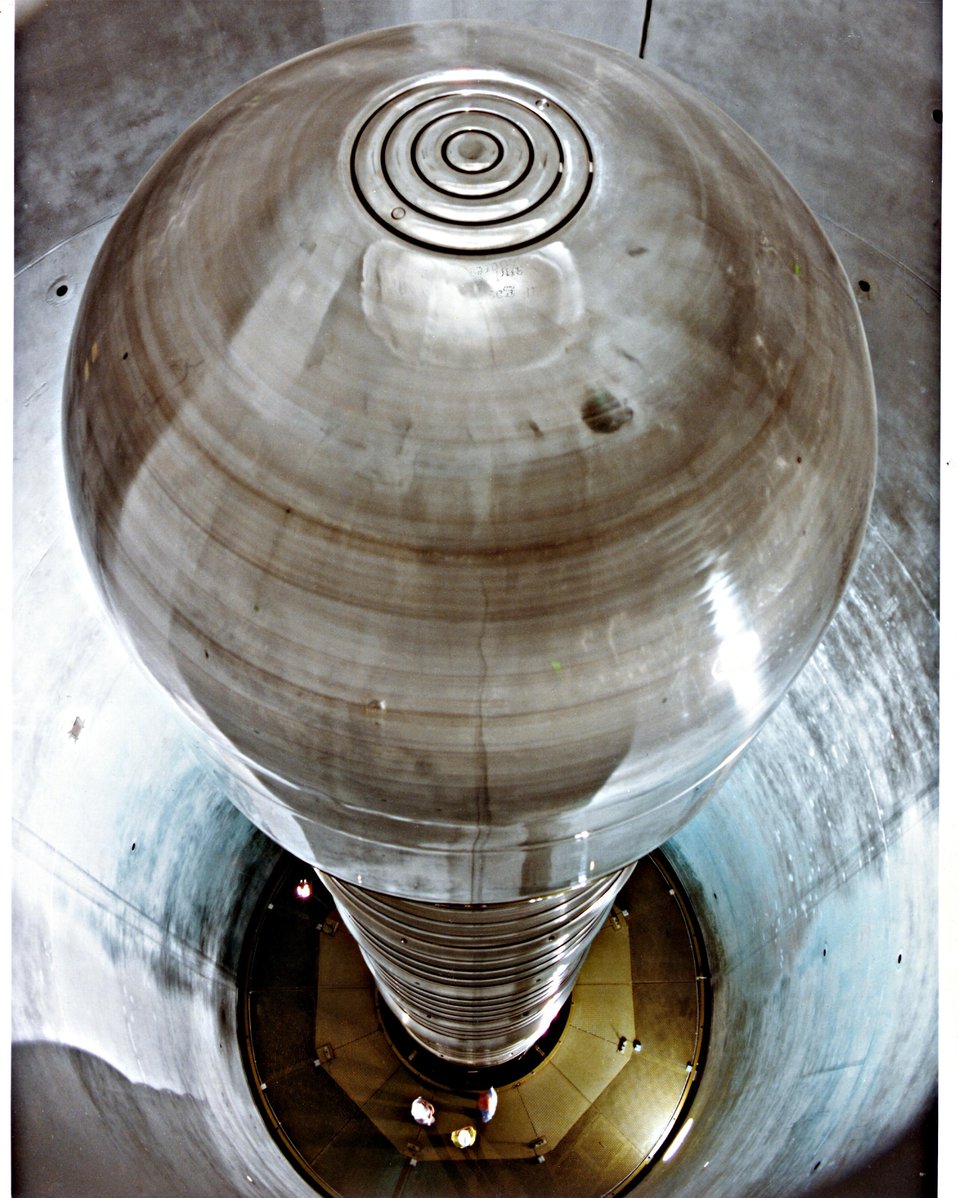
VIEW LOOKING DOWN THE 85-FOOT COLUMN OF THE 25-MILLION VOLT TANDEM ELECTROSTATIC ACCELERATOR.

THE HOLIFIELD HEAVY ION RESEARCH FACILITY IS A TOOL FOR STUDYING THE INTERACTION OF HEAVY, CHARGED PARTICLES OF MATTER. THE COLUMN IS LOCATED WITHIN A 100-FOOT STEEL PRESSURE VESSEL THAT IS CONTAINED INSIDE A 165-FOOT CONCRETETOWER. A LARGE STAINLESS-STEEL TERMINAL SHIELD IS LOCATED AT THE TOP OF THE COLUMN.